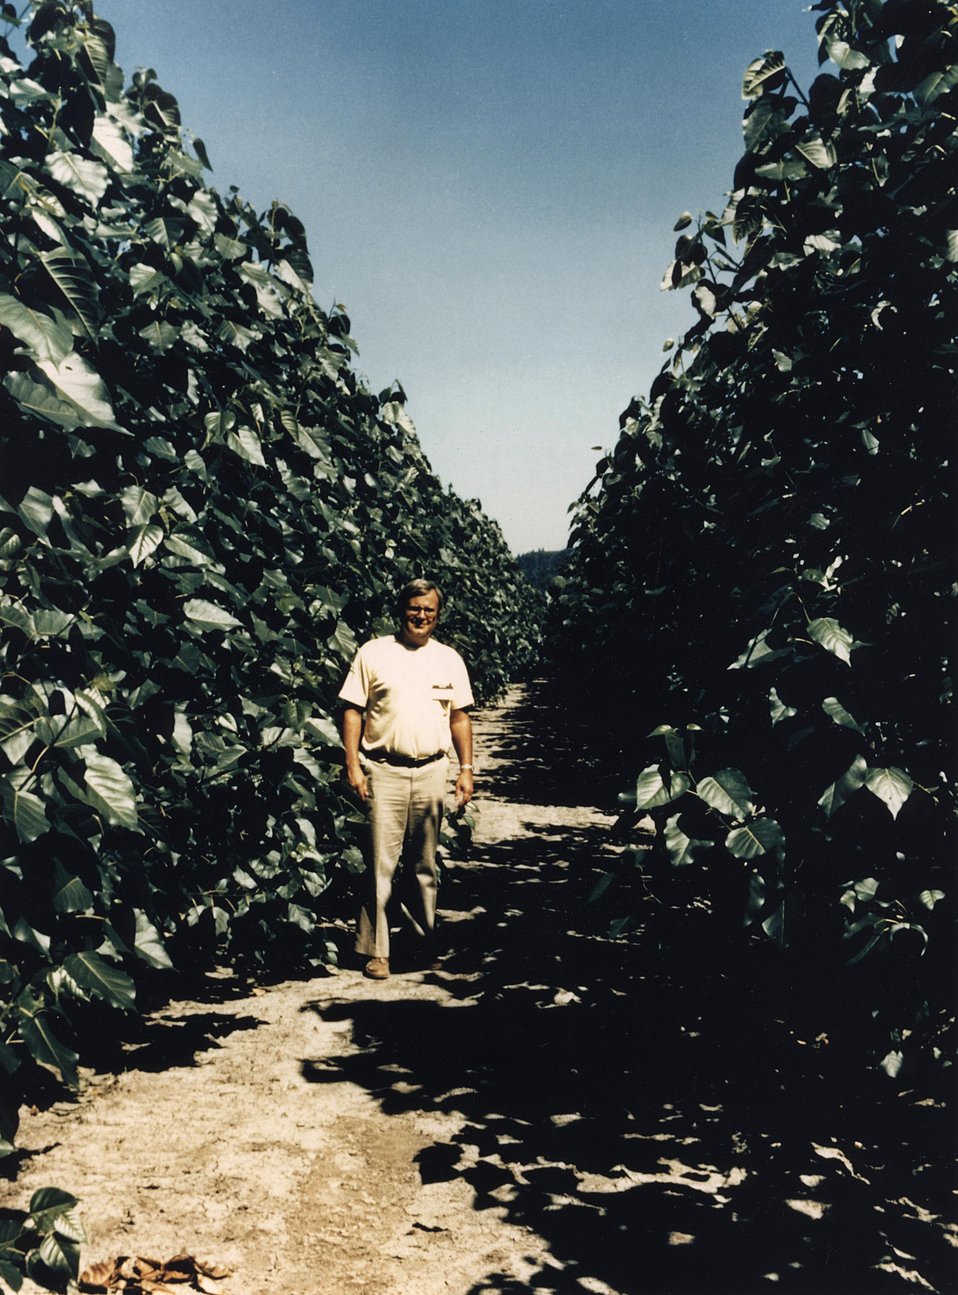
AN ORNL SCIENTIST STANDS BETWEEN ROWS OF SUPERIOR TWO-YEAR OLD POPLAR TREES.